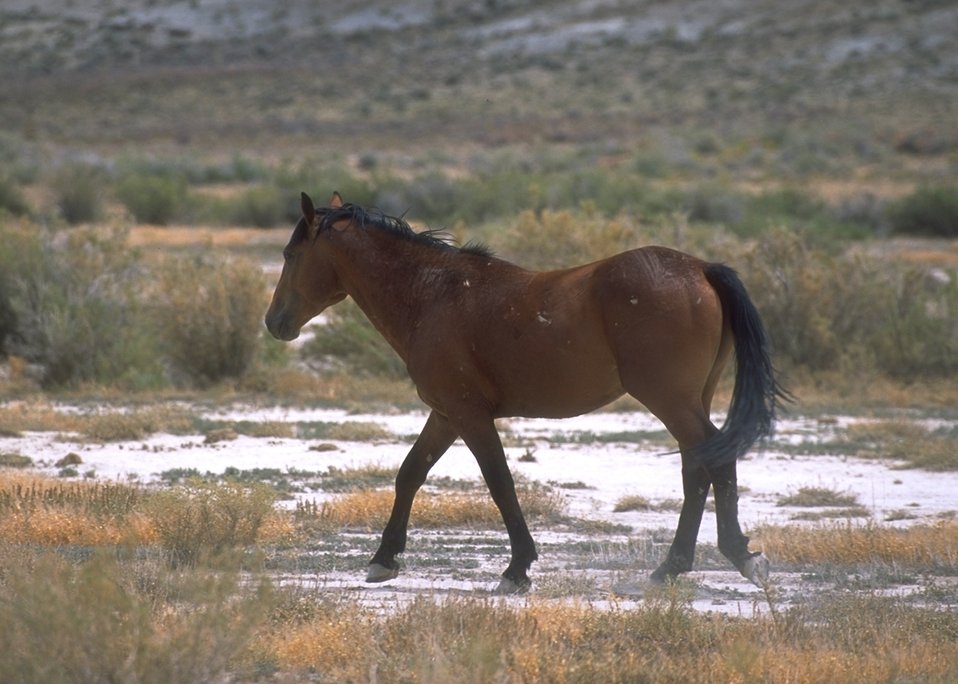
Wild horses, Rock Springs Field Office.